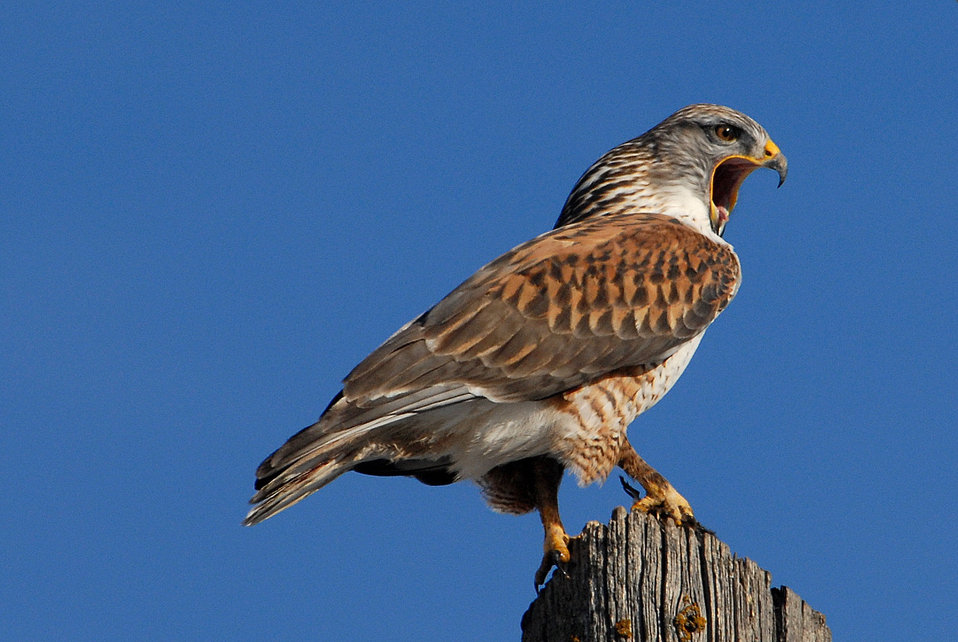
Ferriginous hawk FWS

Ferriginous Hawk